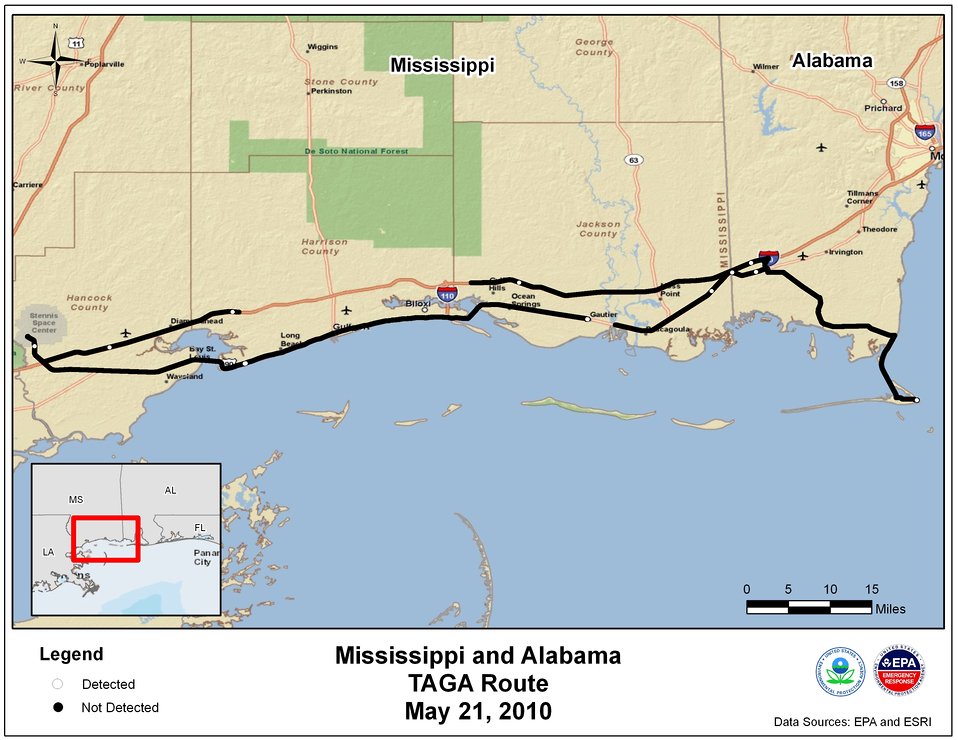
EPA TAGA Air Monitoring Locations May 21, 2010